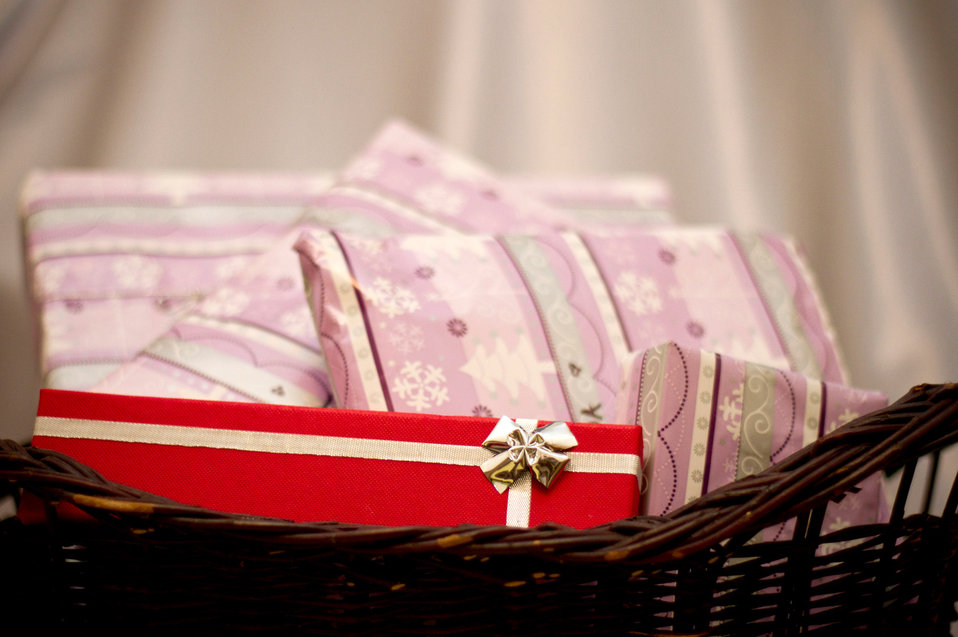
Basket full of presents.